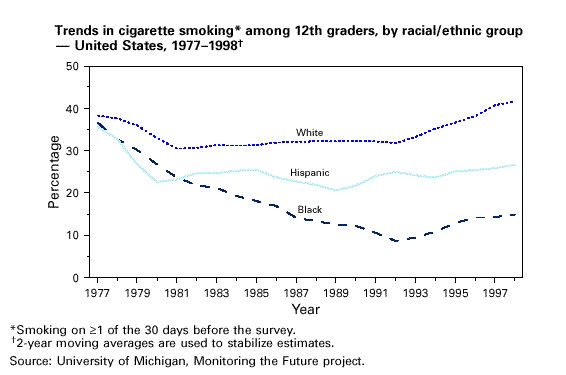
Line graph showing trends in cigarette smoking among 12th graders, by racial/ethnic group.